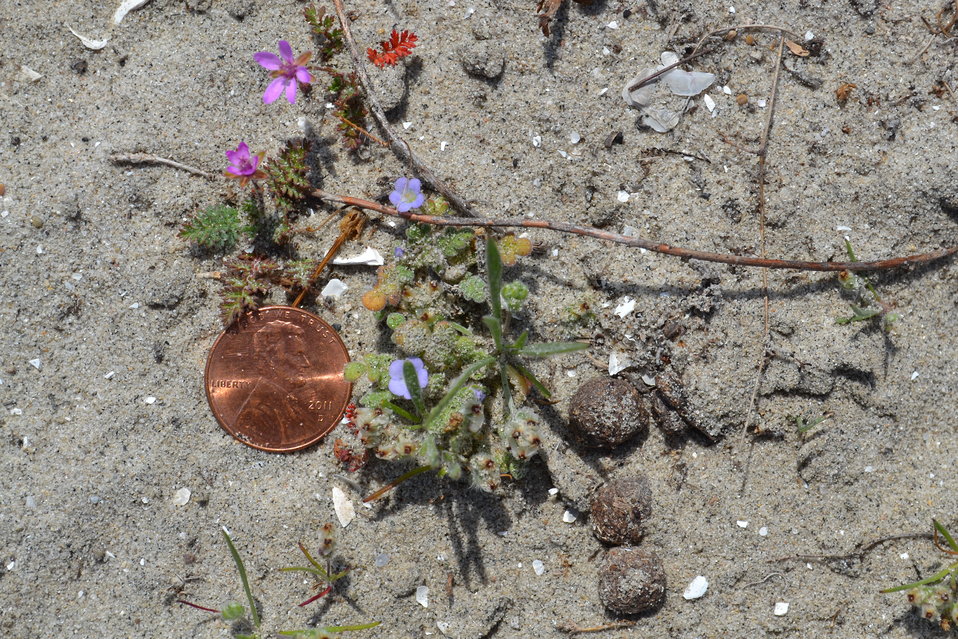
Brand's phacelia (Phacelia stellaris)

This diminutive plant with pale purple flowers (right of coin)
occurs in Riverside, San Bernardino, and San Diego Counties, California. Photo Credit: Nancy Ferguson/USFWS

More:

Distribution: San Diego County, Los Angeles County; Baja California, Mexico

Habitat: This annual grows in sandy openings in Diegan Sage Scrub near the coast. At Border Field the soils are mapped as Marina loamy coarse sand.

Known Sites: A small population is still extant on a bluff at Border Field State Park within a few hundred yards of the Mexican border. A recent report is of a small population on the north side of the mouth of the Santa Margarita River on the back dunes. Herbarium specimens record sites in the bed of the San Diego River, on the Silver Strand, and at Crown Point. These historical locales may no longer be extant. Old reports include Downey in Los Angeles County, where probably no longer extant, and near Old Town in San Diego.

Six specimens from Baja California are found in the herbarium of the San Diego Natural History Museum; south to 30 22 minutes North where collected by Moran (SD 91250) on coastal dunes 4 miles southeast of Santa Maria.

Status: This species is almost extirpated in the United States, and apparently quite rare in Baja California. It is recommended for California Endangered status. The Border Field site is situated in a sandy opening which is readily degraded by foot traffic from the numerous tourists to this park; as well as by illegal immigrants crossing at the fence immediately to the south. A synonym for Brand's Phacelia is Phacelia douglasii var. cryptantha. All populations should be fully protected with adequate buffers.

Santiago Peak Phacelia [Phacelia suaveolens Greene var. keckii (M.& J.) J. T. Howell]